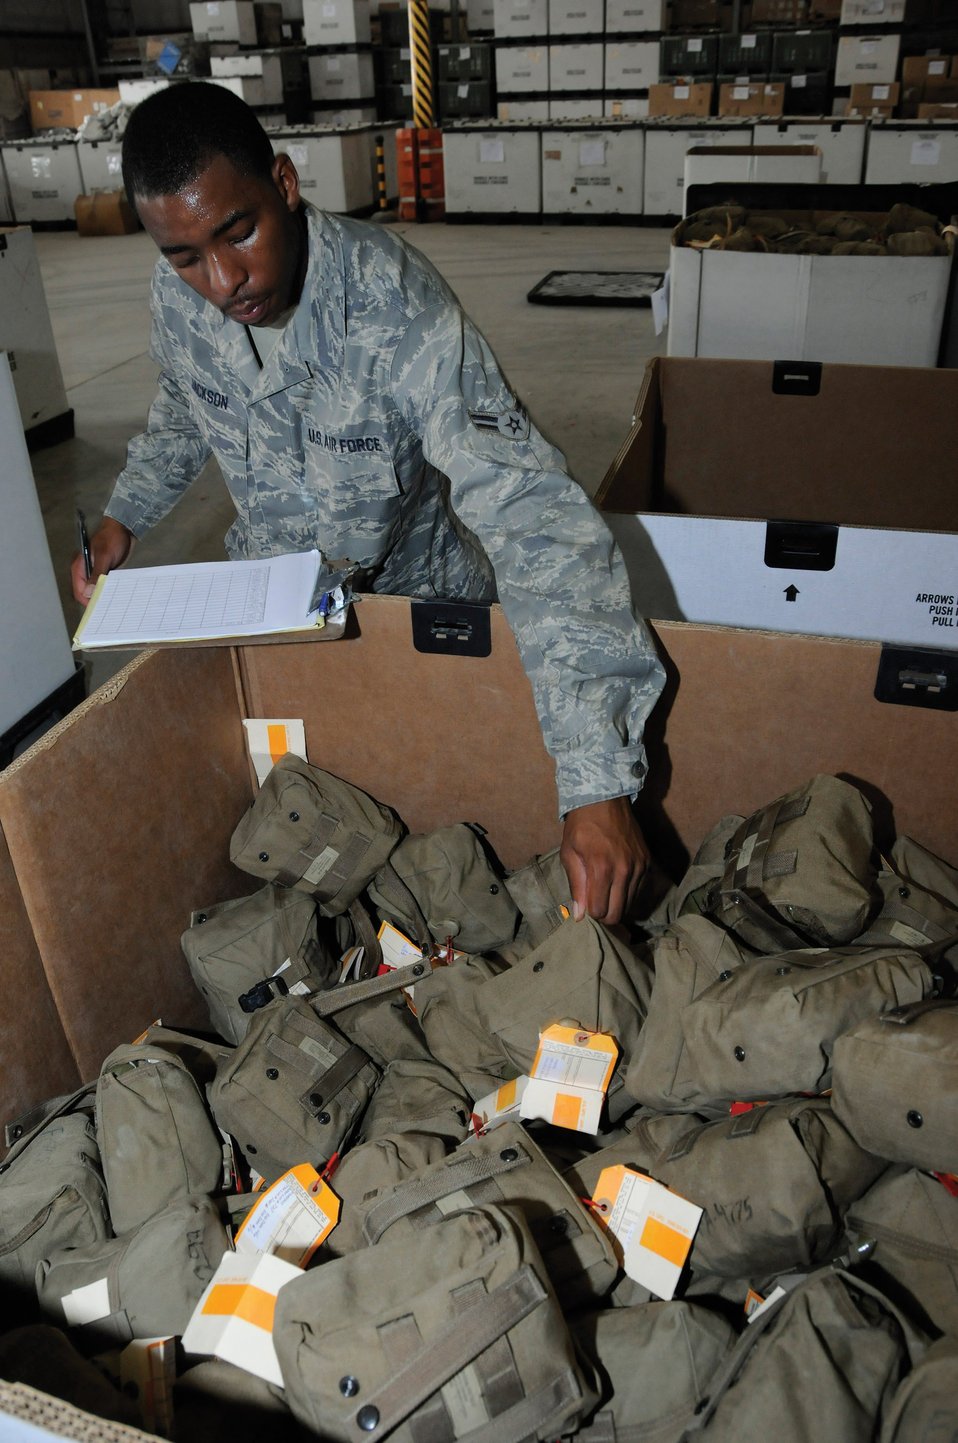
Small group takes small packages, makes huge impact

Airman 1st Class Demetrius Jackson grabs another individual first aid kit from a full box of kits to check off his list Aug. 19. The kits are checked to make sure they match up with their DD form 1574 (serviceable tag - material). Items inside the kits are checked for expiration dates to ensure they are serviceable. Airman Jackson is a member of the team revitalizing the kits, part of the recertification process to get them back into use. Airman Jackson is assigned to the 379th Expeditionary Logistics Readiness Squadron, a native of New Orleans, is deployed to Southwest Asia from Holloman Air Force Base, N.M.